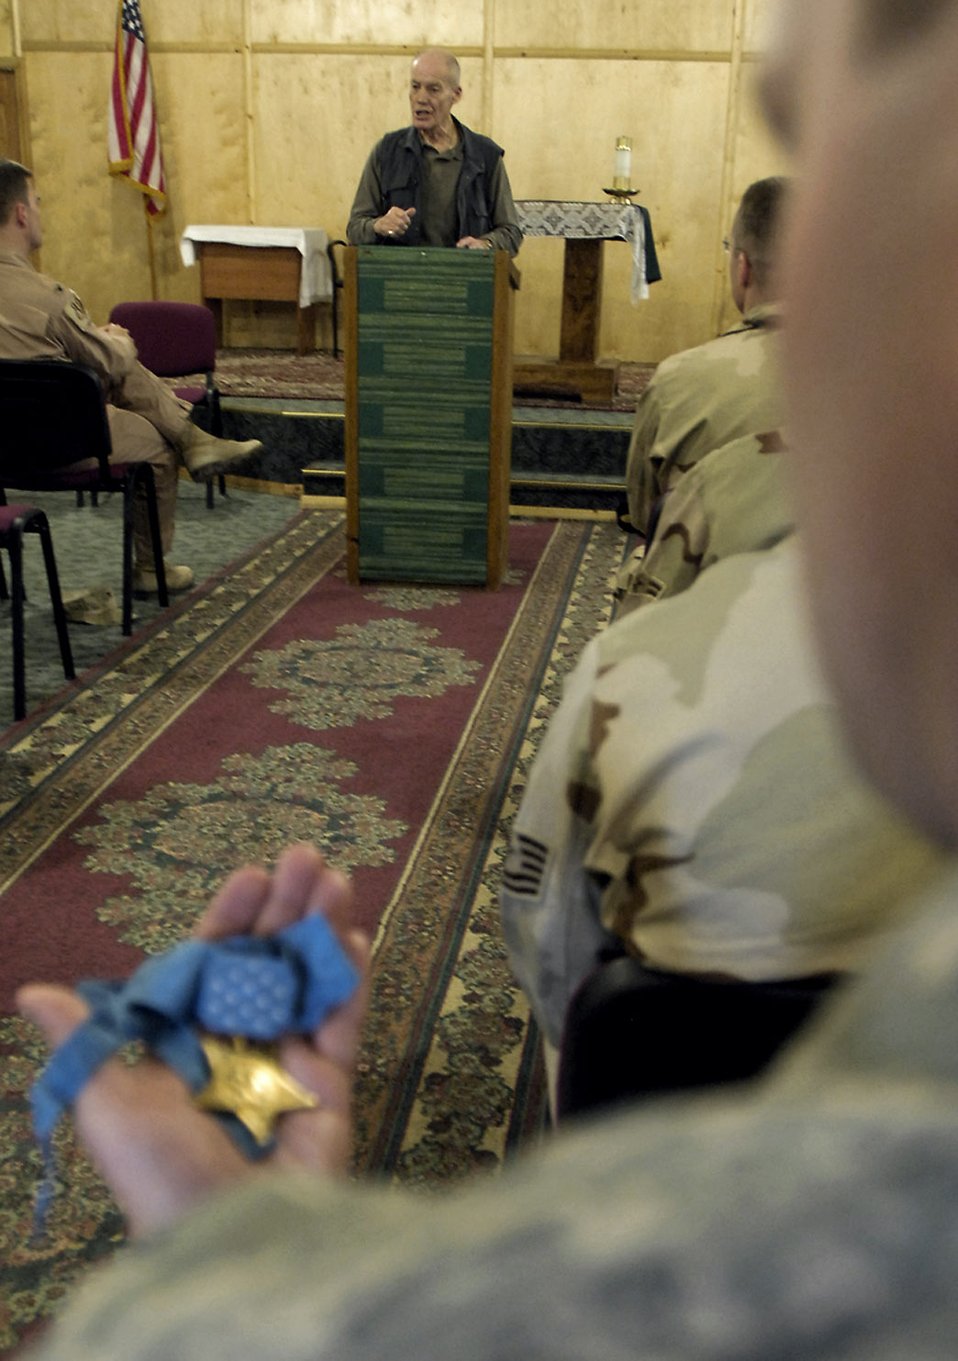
Medal of Honor recipients visit Manas Air Base

Medal of Honor recipients retired Army Col. Robert L. Howard and retired Marine Capt. John J. McGinty III share their experiences with Top 3 Council members March 15 at Manas Air Base, Kyrgyzstan. Both recipients received their medals from actions taken during the Vietnam War.